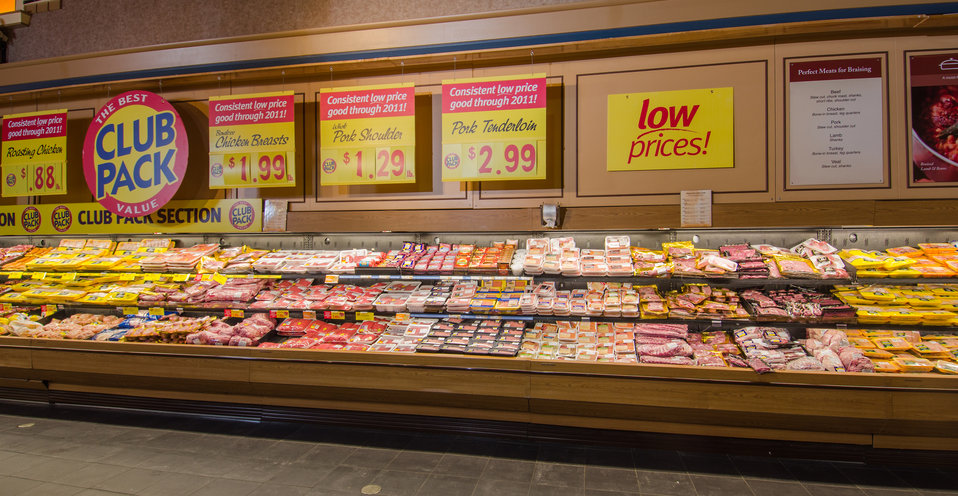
Meat products at a grocery store in Fairfax, Virginia, on March 3, 2011.